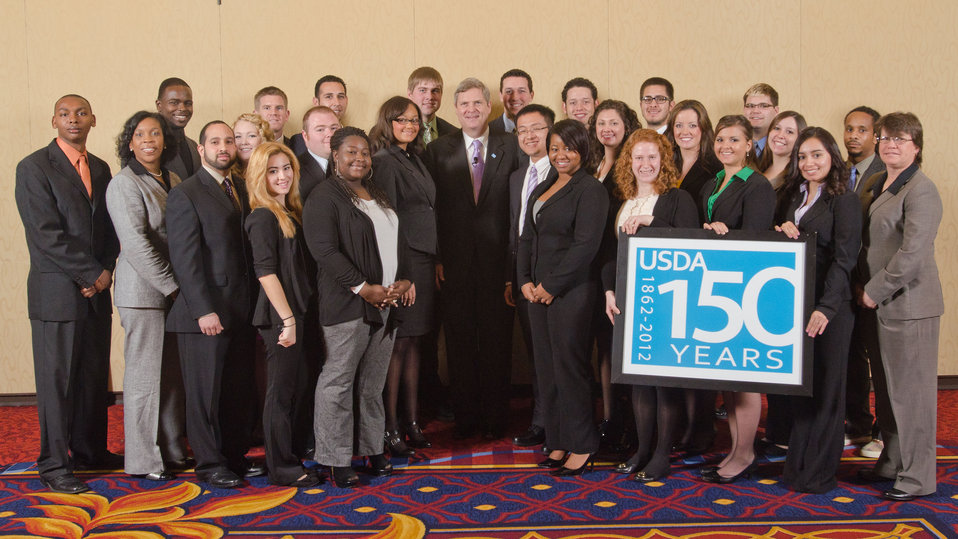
Agriculture Secretary Tom Vilsack (center) with the winners of the Student Diversity Program, at the 2012 Agricultural Outlook Forum, “Moving Agriculture Forward” in Arlington, VA, on Thursday, February 23, 2012. In the photograph, front row, left to right, are Auburn University student Waudell Tucker, Jr.; University of Maryland student Lisa Purnell, St. Thomas University student Carlos Vazquez; Miami Dade Community College student Stephanie Diaz; Virginia State University student Joy Atkins; North Carolina Agriculture & Technical State University student Amber Lassiter; Cornell University student Emmaline Long; University of Maryland student Charlotte Thompson; Texas A & M University student Joyce Ramirez and Middle Tennessee State University student Monica Adamson. In the middle row, left to right, are Prairie View A & M University student Ernest G. Branford, Florida Agricultural and Mechanical University student Kaleigh Monroe; Oklahoma State University student Jason Harris; Alcorn State University student Neesh Tolliver; Agriculture Secretary Tom Vilsack; University of Maryland student Yuandong Qi; Southern Illinois University student Danielle Farley; University of Maryland student Crystal Francis; Texas State University student Marissa Martinez; Virginia State University student Antonio McLaren. In the back row, left to right, are Texas Tech University student Kevin Redwine; California Polytechnic State University student Joe Ruiz; South Dakota State University student Tyler Steinkamp; Oregon State University student Thomas Griffin; Northern Arizona University student Xavier Sanders; University of Arizona student Nicholas Camacho; and University of Maryland student Richard Stonebraker.